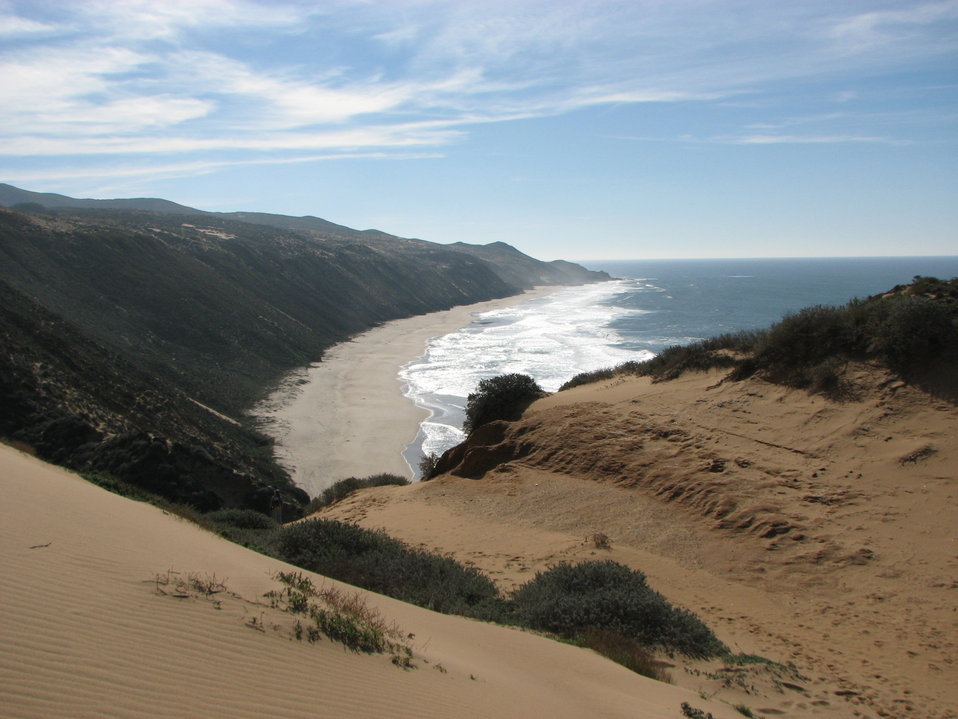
Paradise beach from mussel point

(Shawn Milar,/USFWS)